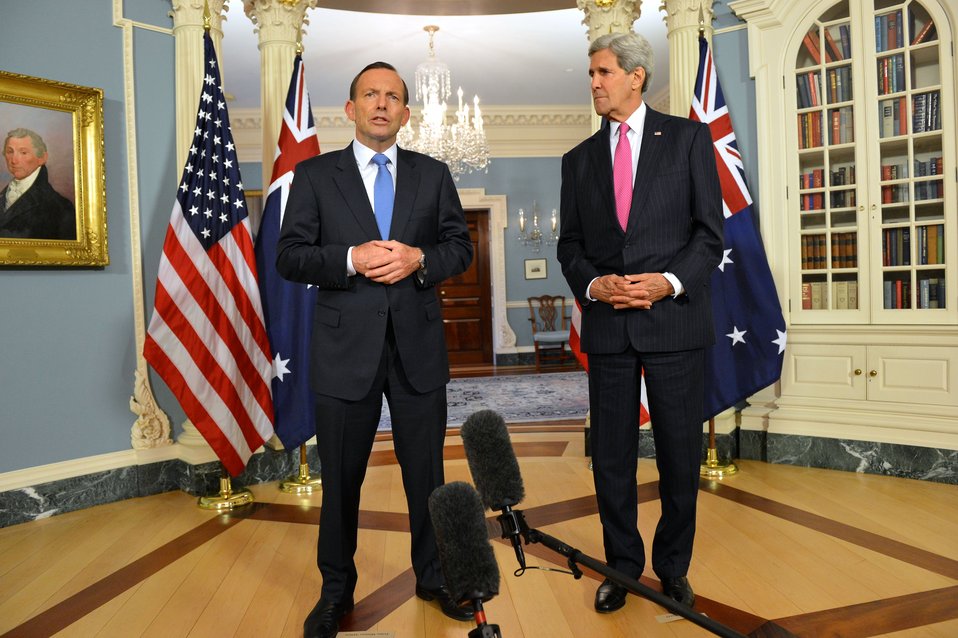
Secretary Kerry and Australian Prime Minister Abbott Address Reporters

U.S. Secretary of State John Kerry and Australian Prime Minister Tony Abbott address reporters at the U.S. Department of State in Washington, D.C., on June 12, 2014.